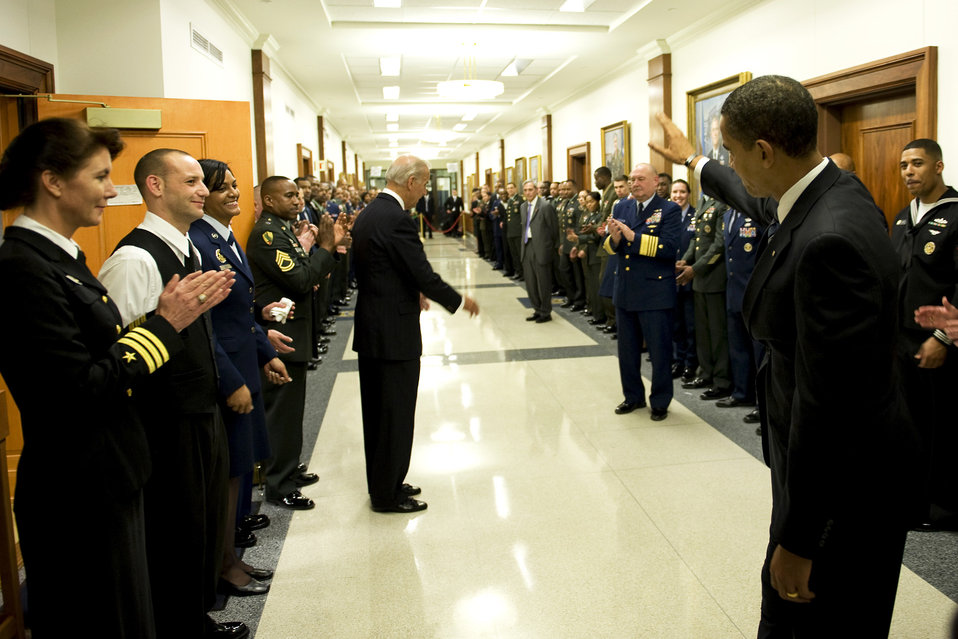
President Obama thanks troops, pledges support

President Barack Obama waves goodbye after meeting servicemembers during his first visit to the Pentagon Jan. 28. President Obama and Vice President Joe Biden met with Defense Secretary Robert M. Gates and all the service chiefs, getting their input on the way ahead in Afghanistan and Iraq.